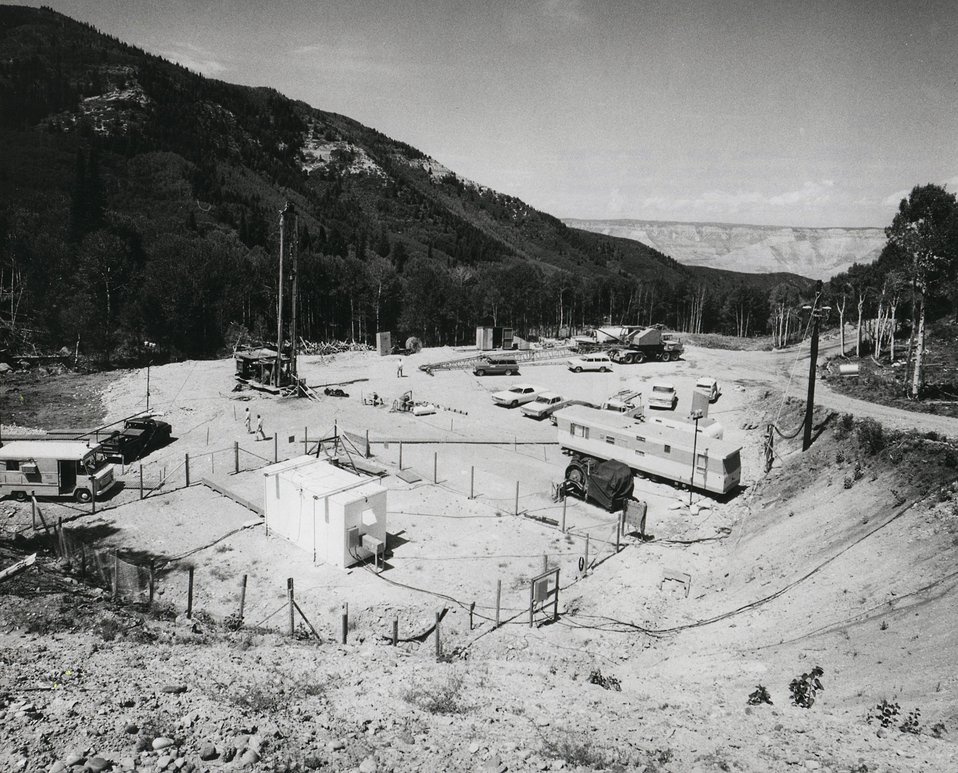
General view of the western Colorado site of Project Rulison, the second Plowshare natural gas simulation experiment before the detonation of September 10, 1969. Circa 1969.